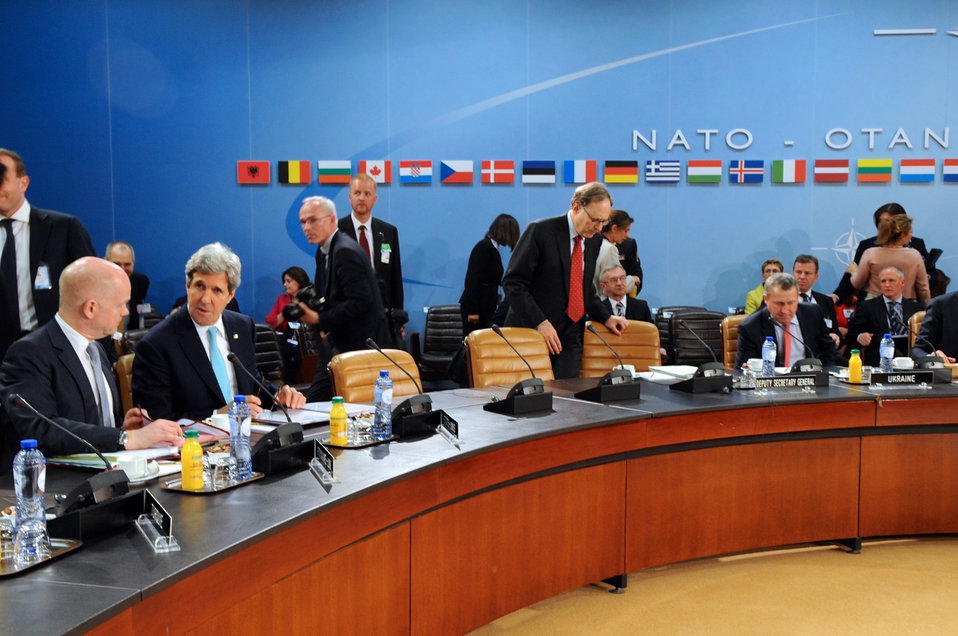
Secretaries Kerry, Hague Join NATO-Ukraine Commission Session in Brussels

U.S. Secretary of State John Kerry and British Foreign Secretary William Hague join their fellow foreign ministers for a NATO-Ukraine Commission Session at NATO Headquarters in Brussels, Belgium, on April 1, 2014.